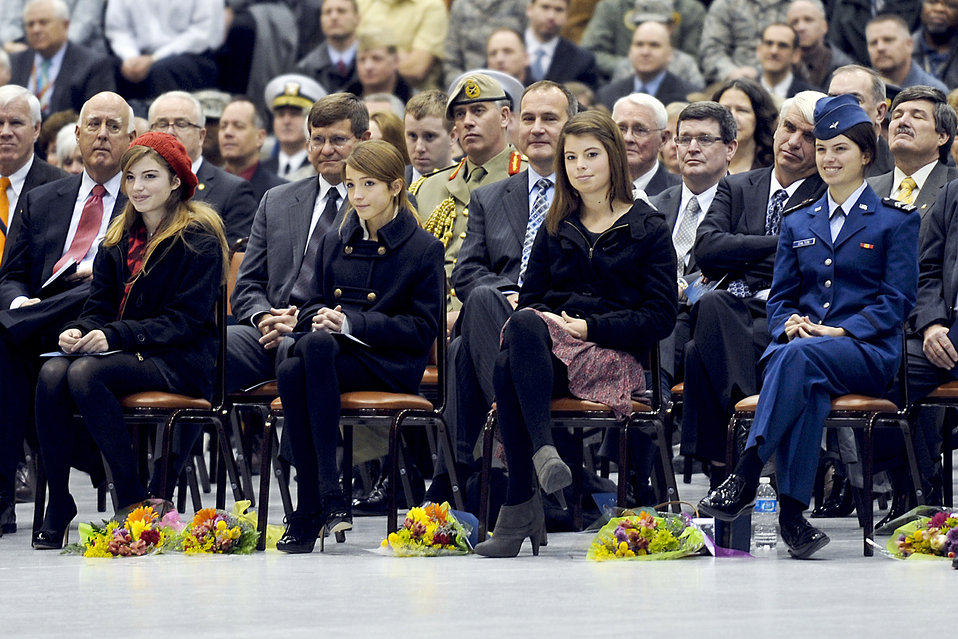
STRATCOM change of command

The four daughters of Gen. Kevin P. Chilton, outgoing commander of U.S. Strategic Command, smile as he thanks them for their